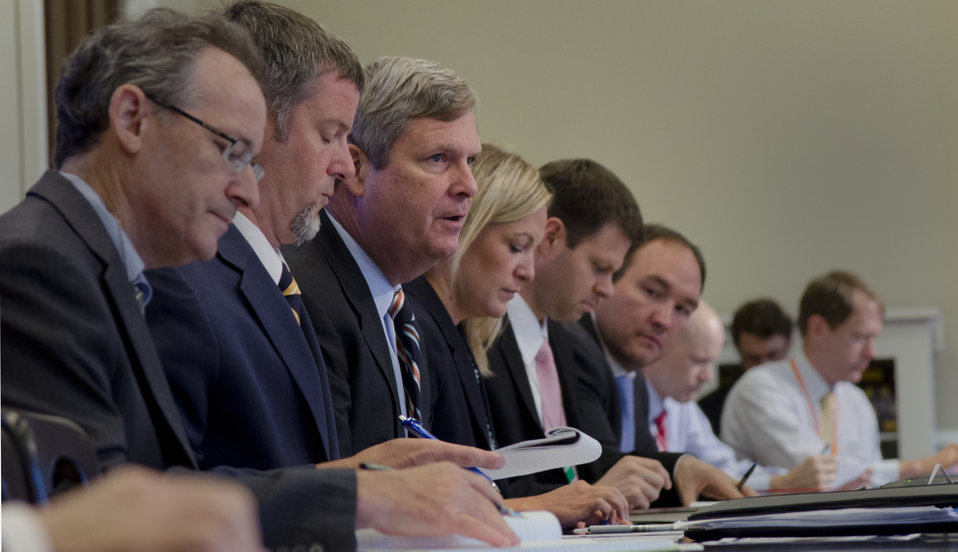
Agriculture Secretary Tom Vilsack chaired a meeting of the White House Rural Council at the Executive Office Building in Washington, D.C. on Friday, July 27, 2012 to update members and stakeholders on the Administration response to the drought and explore ways to assist American farmers and ranchers suffering in its affects. Following President Obama’s instructions of using exiting programs to support struggling farmers and ranchers the U.S. Department of Agriculture’s (USDA) has implemented several processes to assist American farmers and ranchers. USDA has streamlined drought disaster declarations directly from Drought Monitor data, allowed nearly 30 million acres under the Conservation Reserve Program (CRP) to be used for emergency haying or grazing, lowered payment reduction for CRP lands that qualify for emergency haying and grazing in 2012, from 25% to 10%, allowed producers to modify current Environmental Quality Incentives Program (EQIP) contracts to allow for grazing, livestock watering and other conservation activities to address drought conditions, and has authorized haying and grazing of Wetlands Reserve Program (WRP) easement area in drought-affected areas where haying and grazing is consistent with conservation of wildlife habitat and wetlands, and reduced the interest rate for Farm Service Agency (FSA) Emergency loans from 3.75% to 2.25%.